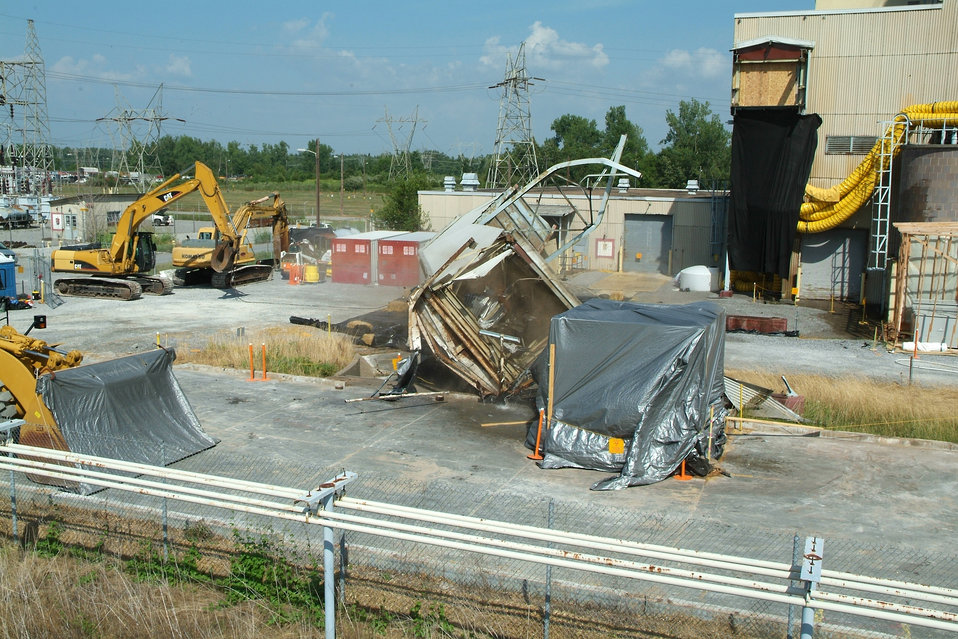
Paducah Metals Plant

Recovery Act demolition and cleanup work conducted at the Paducah site.